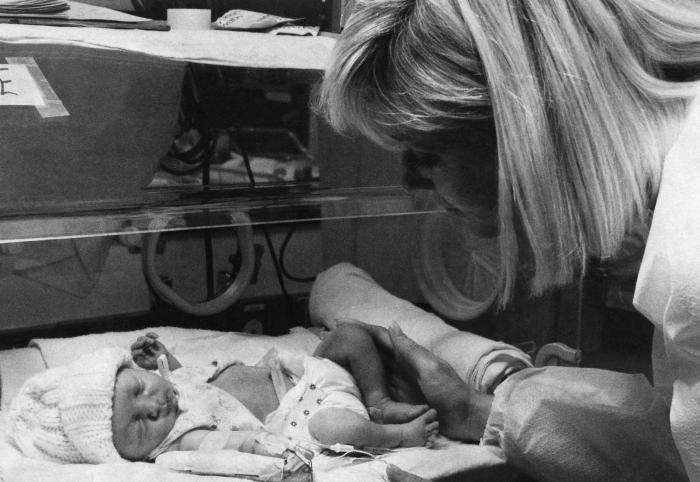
This photograph, which depicts a healthcare worker attending to a newborn infant, was used in a public health awareness campaign promoting prenatal care.